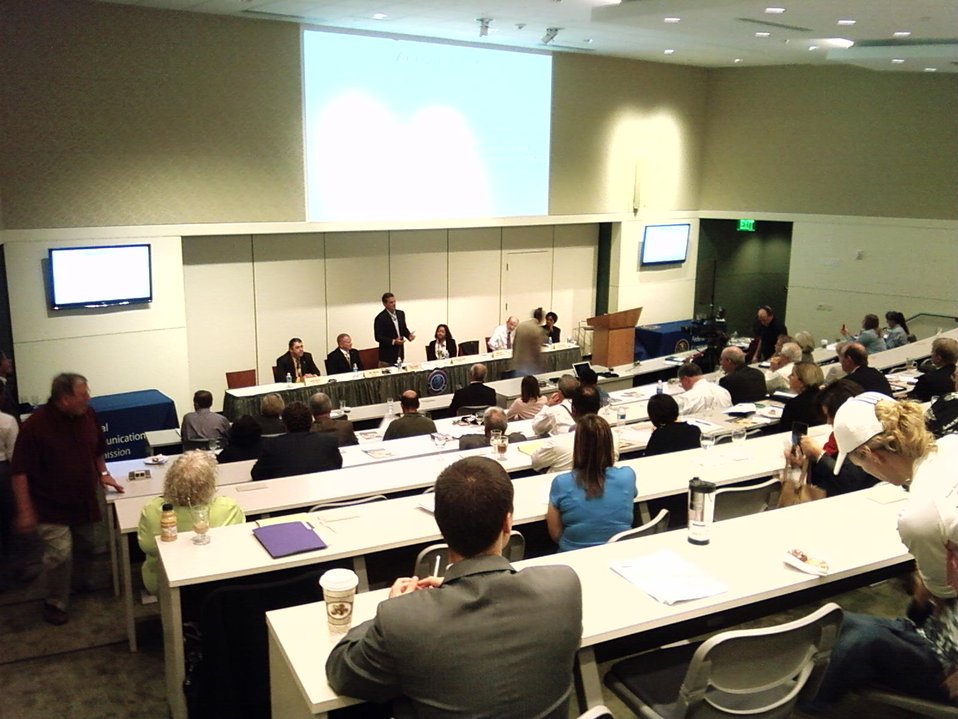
sc event 20

Broadband Field Hearing, in Charleston, South Carolina. 10-06-09